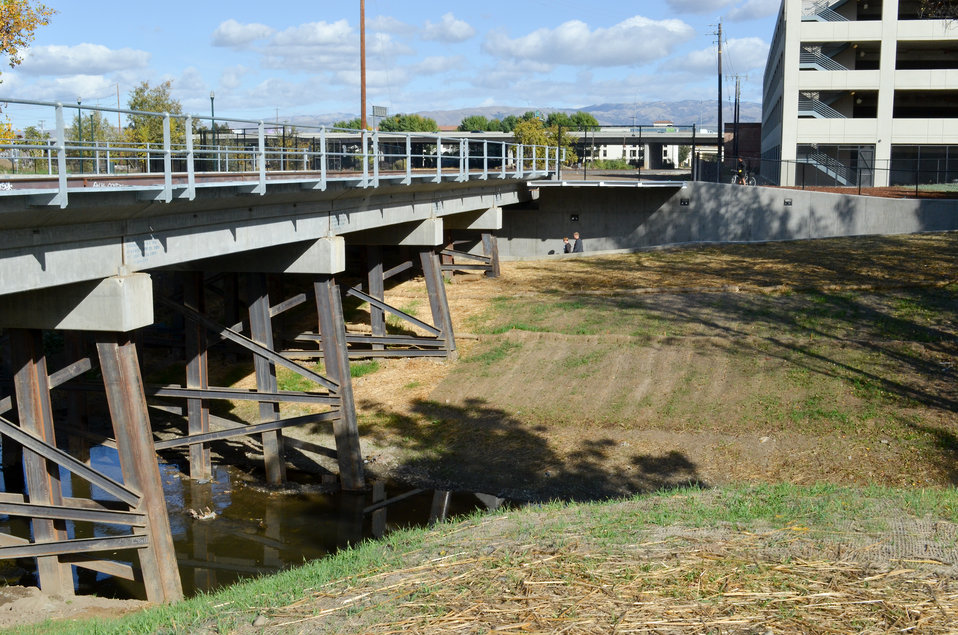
Railroad Bridge #4, November 2011

A new railroad bridge in San Jose, Calif., shown Nov. 21, 2011, is the last piece in the Sacramento District’s decades-long Guadalupe River Project to reduce flood risk for the city.